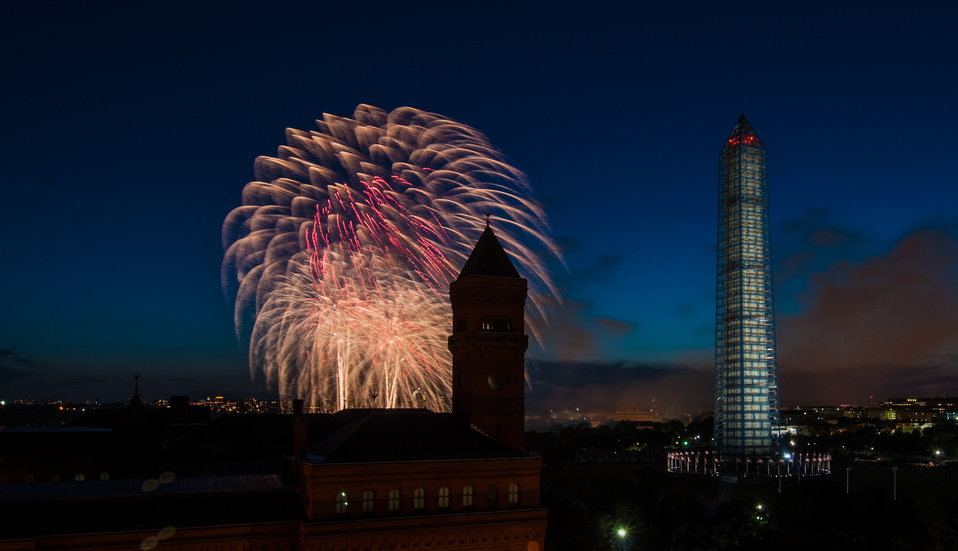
4th of July fireworks as seen from the U.S. Department of Agriculture (USDA) headquarters building, with the USDA Forest Service Yates Building in the foreground, left, and the Washington Monument in Washington, D.C., on July 4, 2013.